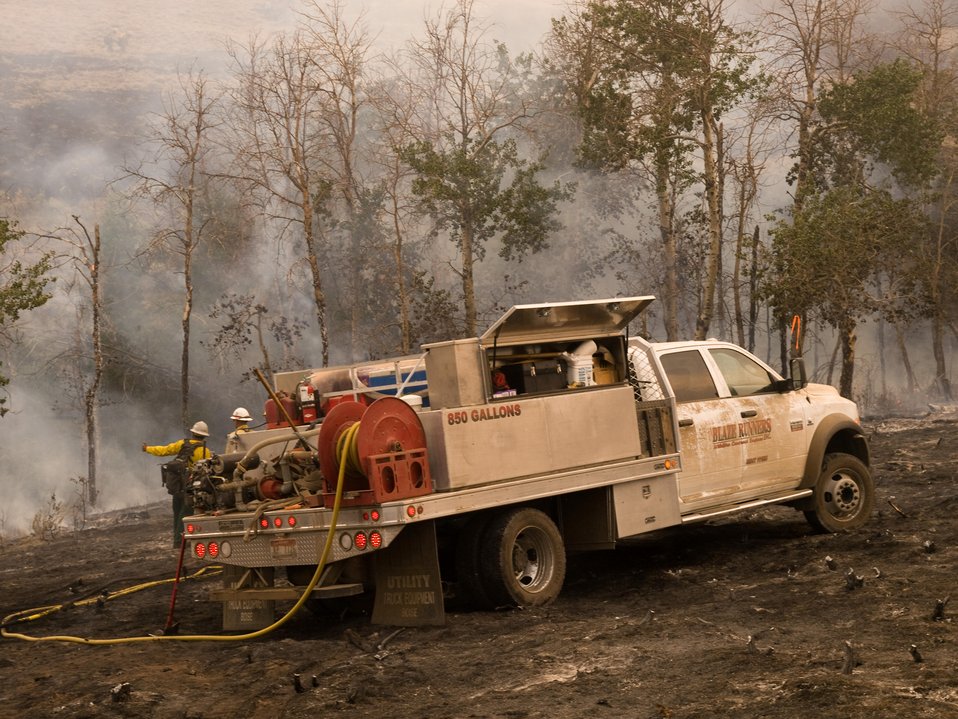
Firefighters work on the Lodgepole Fire. The Lodgepole Fire in the Salmon-Challis National Forest near Challis, ID began on Jul. 20, 2013 by lightning has consumed approximately 13,700 acres and is approximately 15% contained.